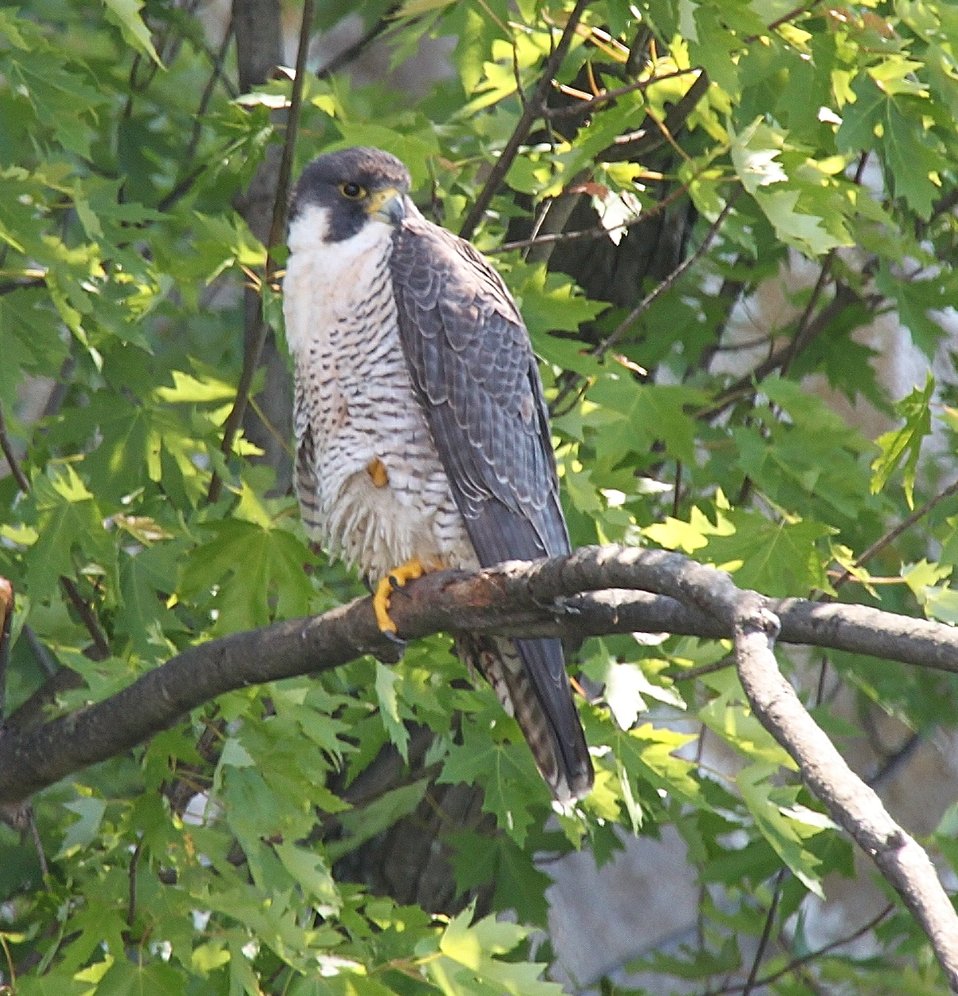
Female Peregrine Falcon photographed at Missisquoi National Wildlife Refuge.